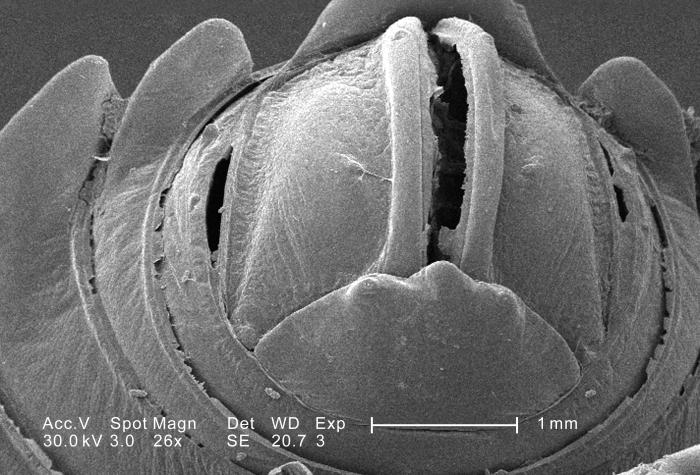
This scanning electron micrograph (SEM) depicted a magnified inferior-oblique view of the caudal segment and its anal orifice, of an unidentified millipede found outside on the ground in the Decatur, Georgia suburbs; Magnified 26x. With their 'jointed legs', millipedes are members of the insect Phylum Arthropoda, and the Class Diplopoda.